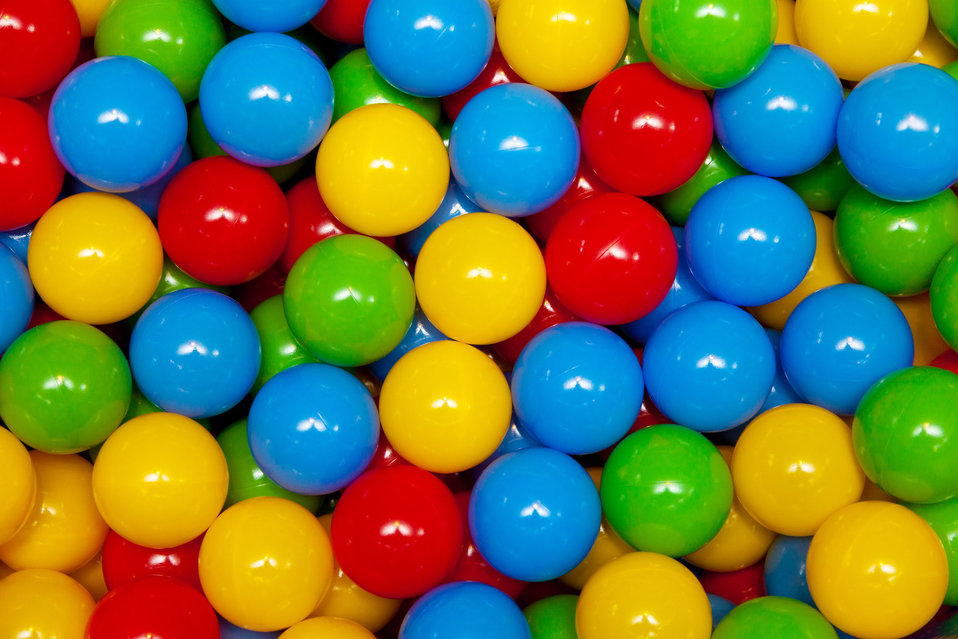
Play balls background

Colorful background image made from play balls.